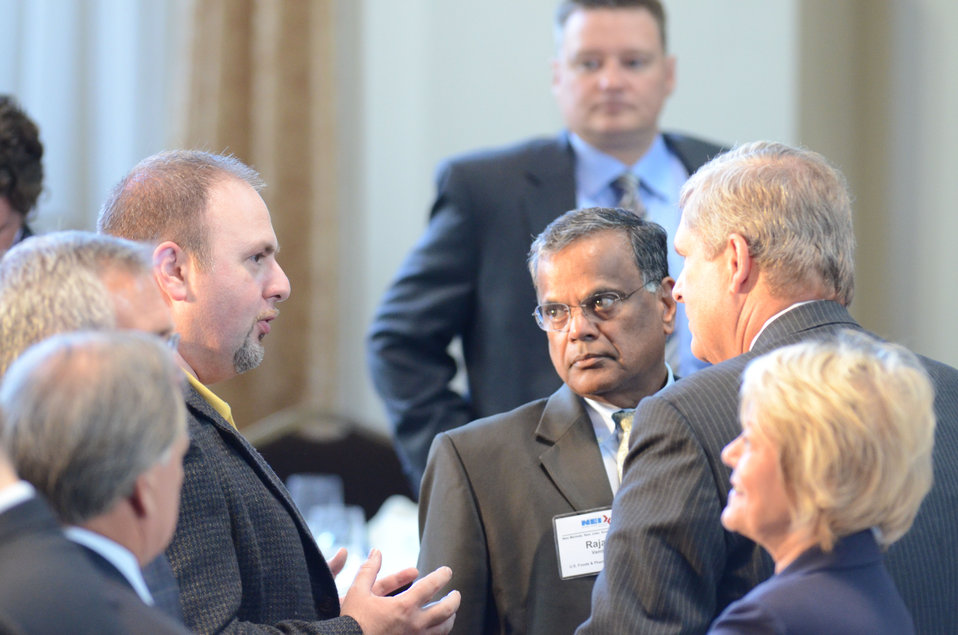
Members of the audience talk to Agriculture Secretary Tom Vilsack speak at the National Export Initiative (NEI) Small Business Tour in Milwaukee, WI, on Wednesday, August 3, 2011. An important goal of the NEI is to provide additional assistance to small and medium-sized businesses, which are major drivers of job creation. The NEI is assisting small and medium-sized businesses win more foreign government contracts, find buyers worldwide, participate in more trade missions and trade shows, receive more export financing, and learn new ways to sell products and services overseas.